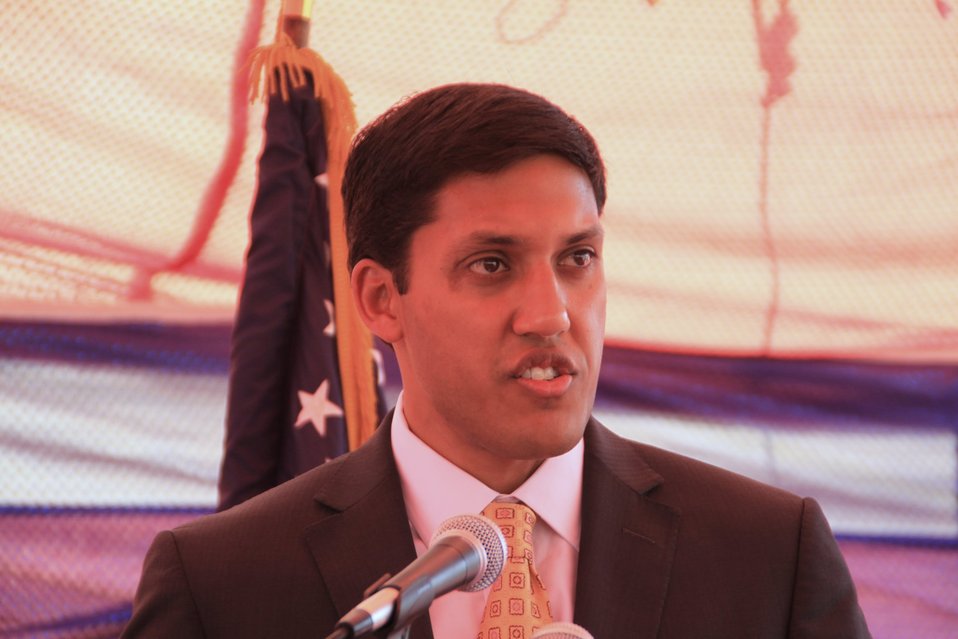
Badam Bagh Farm